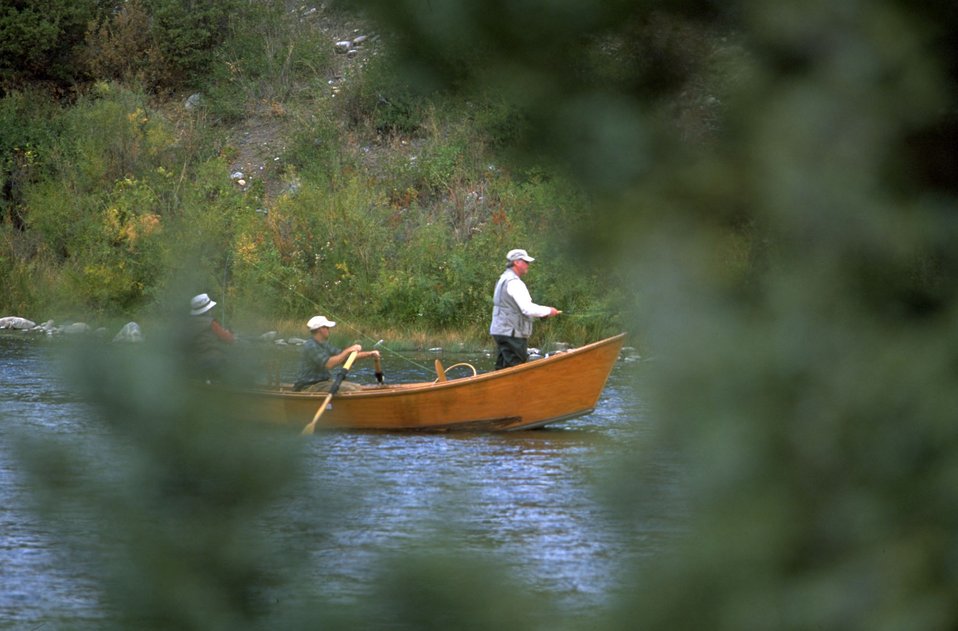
Float Fishing on the Madison River